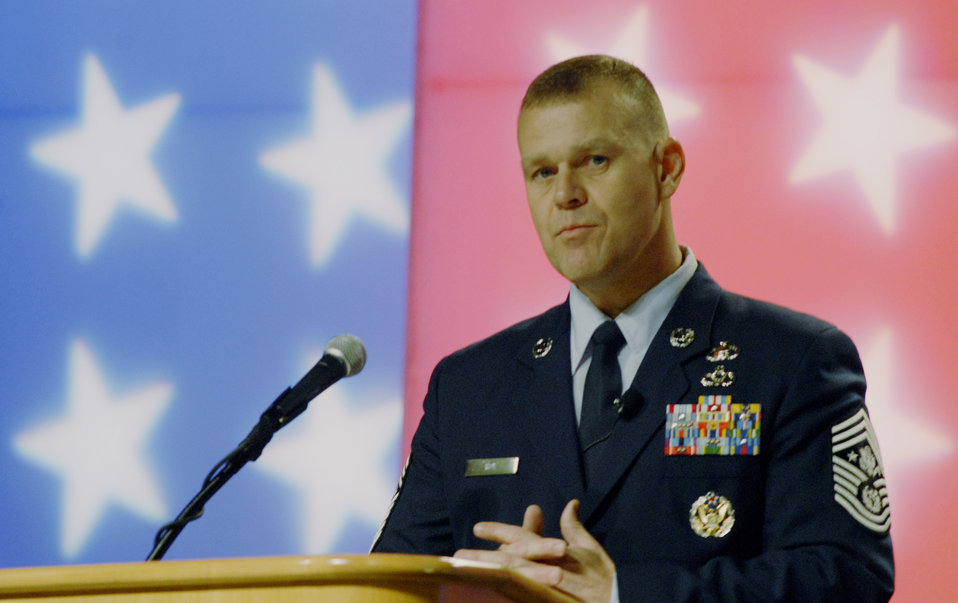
CMSAF addresses AFSA conference

Chief Master Sergeant of the Air Force James Roy speaks to an Air Force Sergeants Association Professional Airmen's Conference audience Aug. 18 in Atlanta, during which he praised the enlisted force and highlighted several of his key priorities.